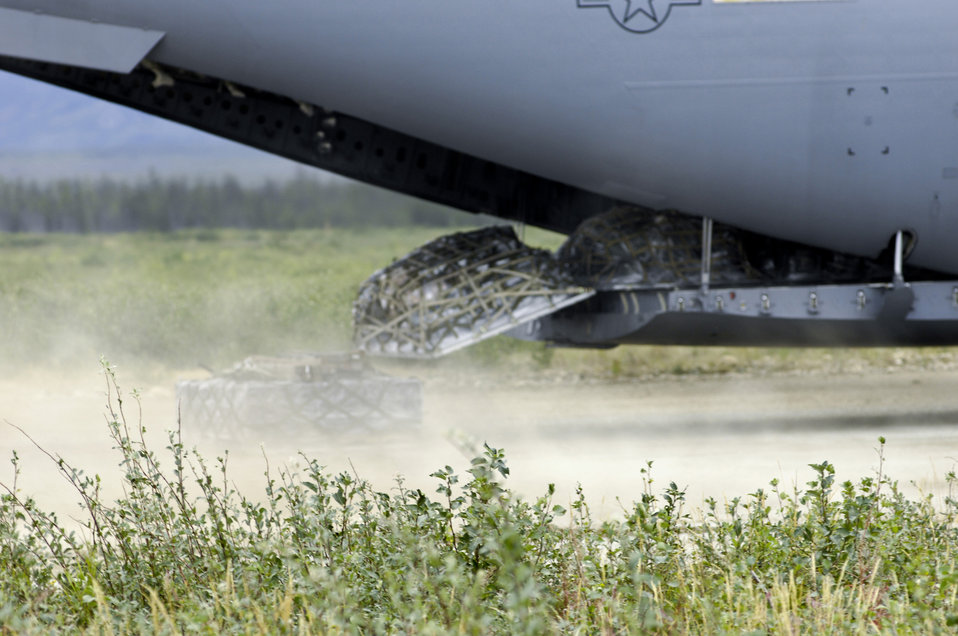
Elmendorf Airmen support Army's Operation Arctic Response

Pallets drop out of the back of a C-17 Globemaster III Aug. 24 at an unimproved landing strip near Elmendorf Air Force Base, Alaska. Airmen from the 517th Airlift Squadron and 249th Airlift Squadron participated in the Army's Operation Arctic Response to help deploy 120 Soldiers and supplies to the remote site.